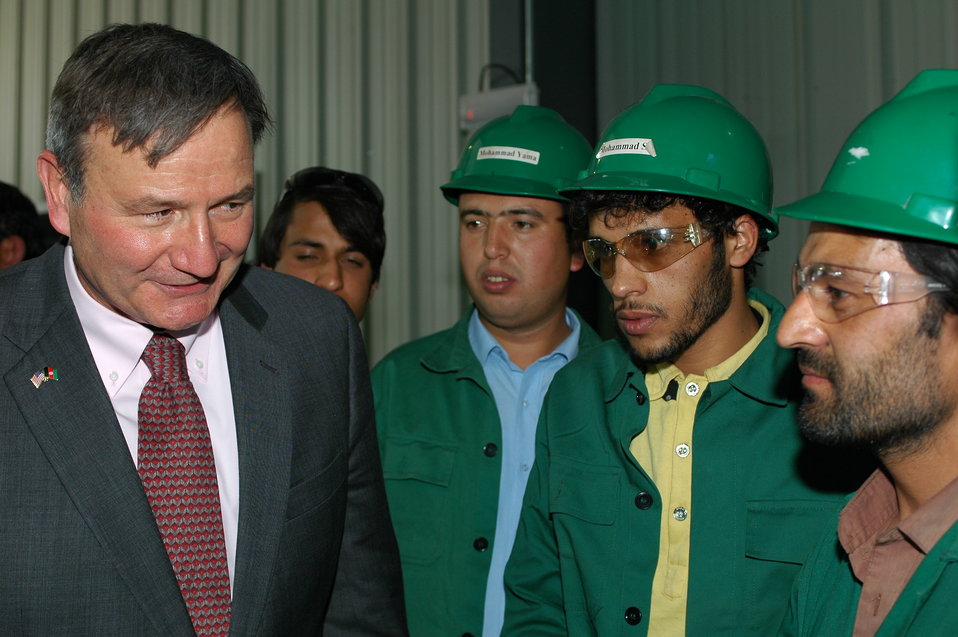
105 MW Tarakhil Power Plant Handover